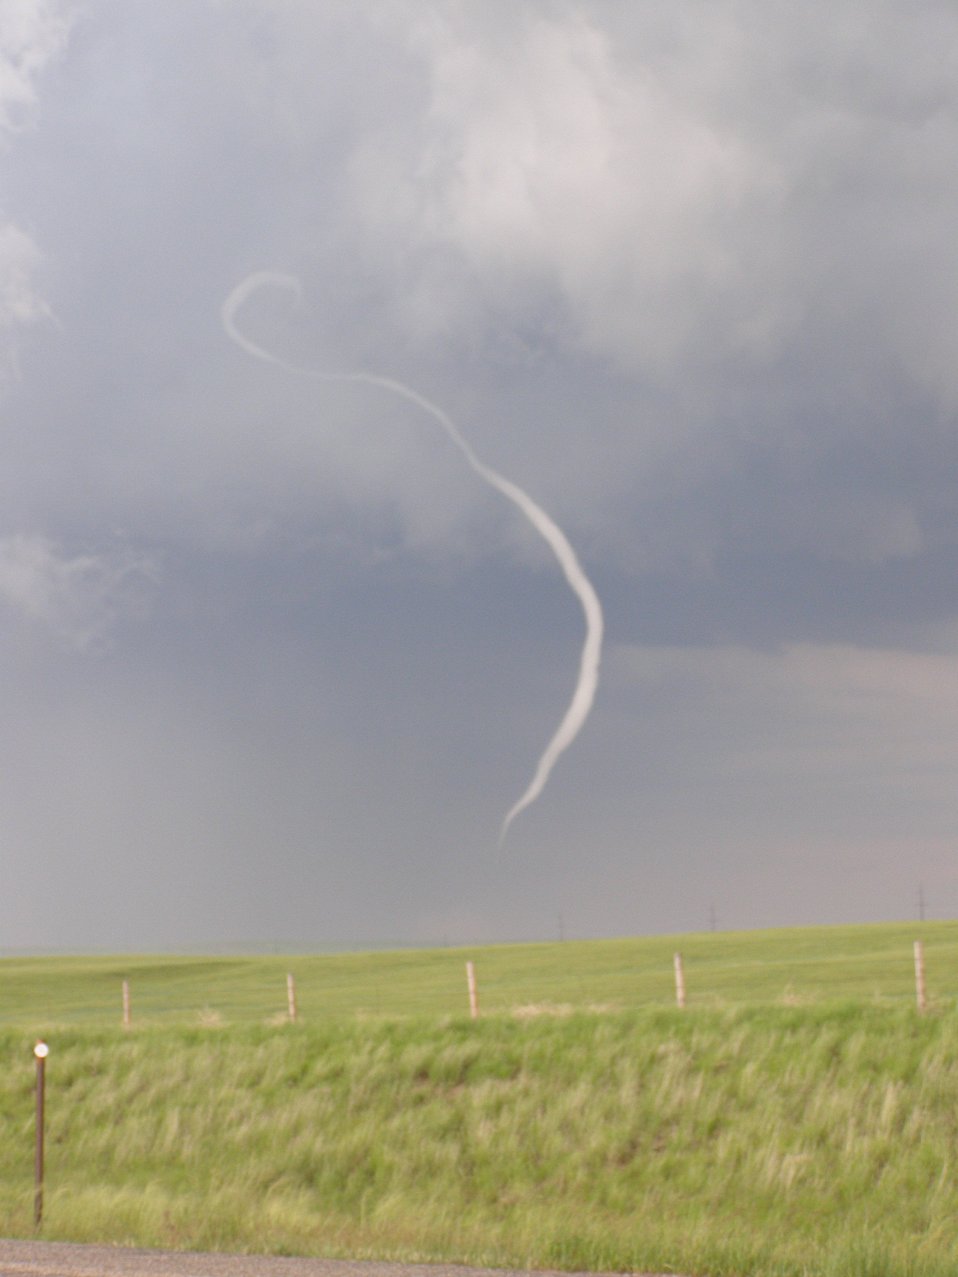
VORTEX2 intercepts a tornado in SE Wyoming on June 5, 2009.